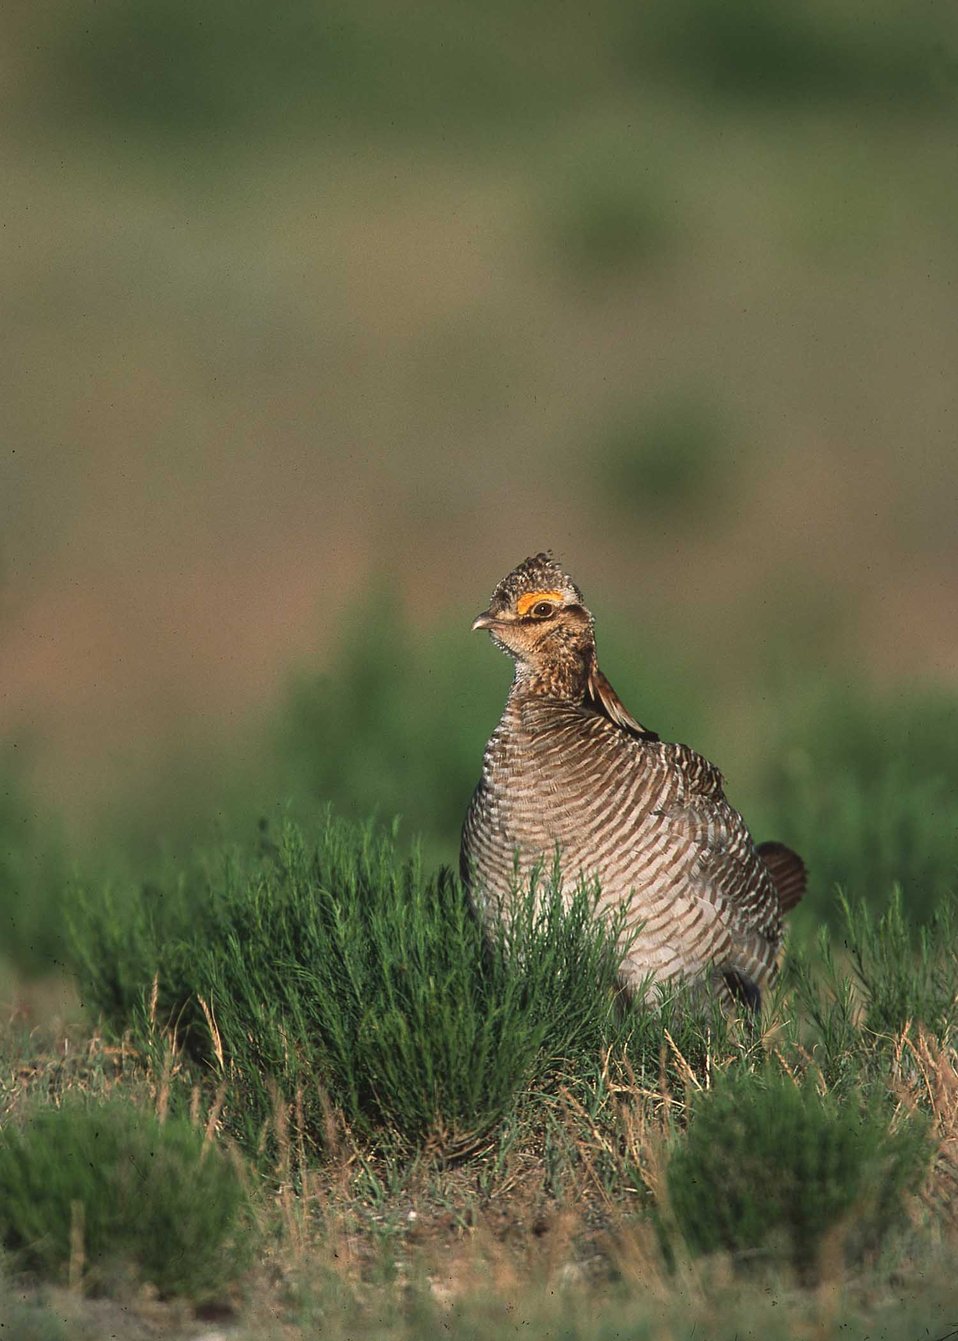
Lesser prairie chicken in Eastern New Mexico.